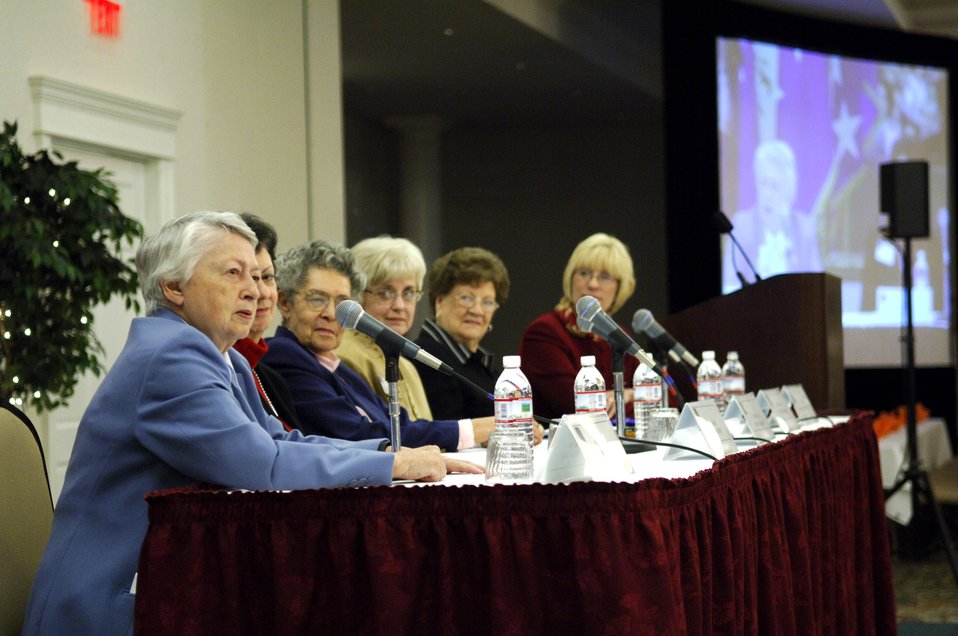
Captial Shield 2008

Brig. Gen. Wilma Vaught, Col. Regina Aune, Chief Master Sgt. Dottie Holmes, Senior Master Sgt. Terri Picarro and Mrs. Margaret Ringenberg answer questions relating to Air Force women from the 1940s to the 1960s during the 2007 Air Force Heritage to Horizon Women's Training Symposium Oct. 31.